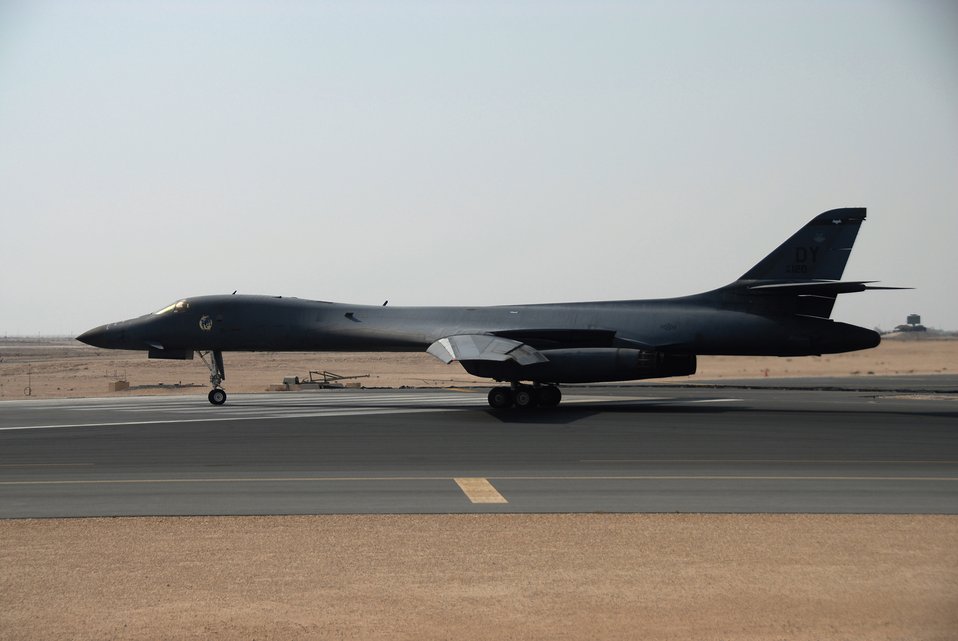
B-1 involved in ground incident

A B-1B Lancer, similar to this one, was involved in a ground incident at an air base in Southwest Asia. The crew was not injured.